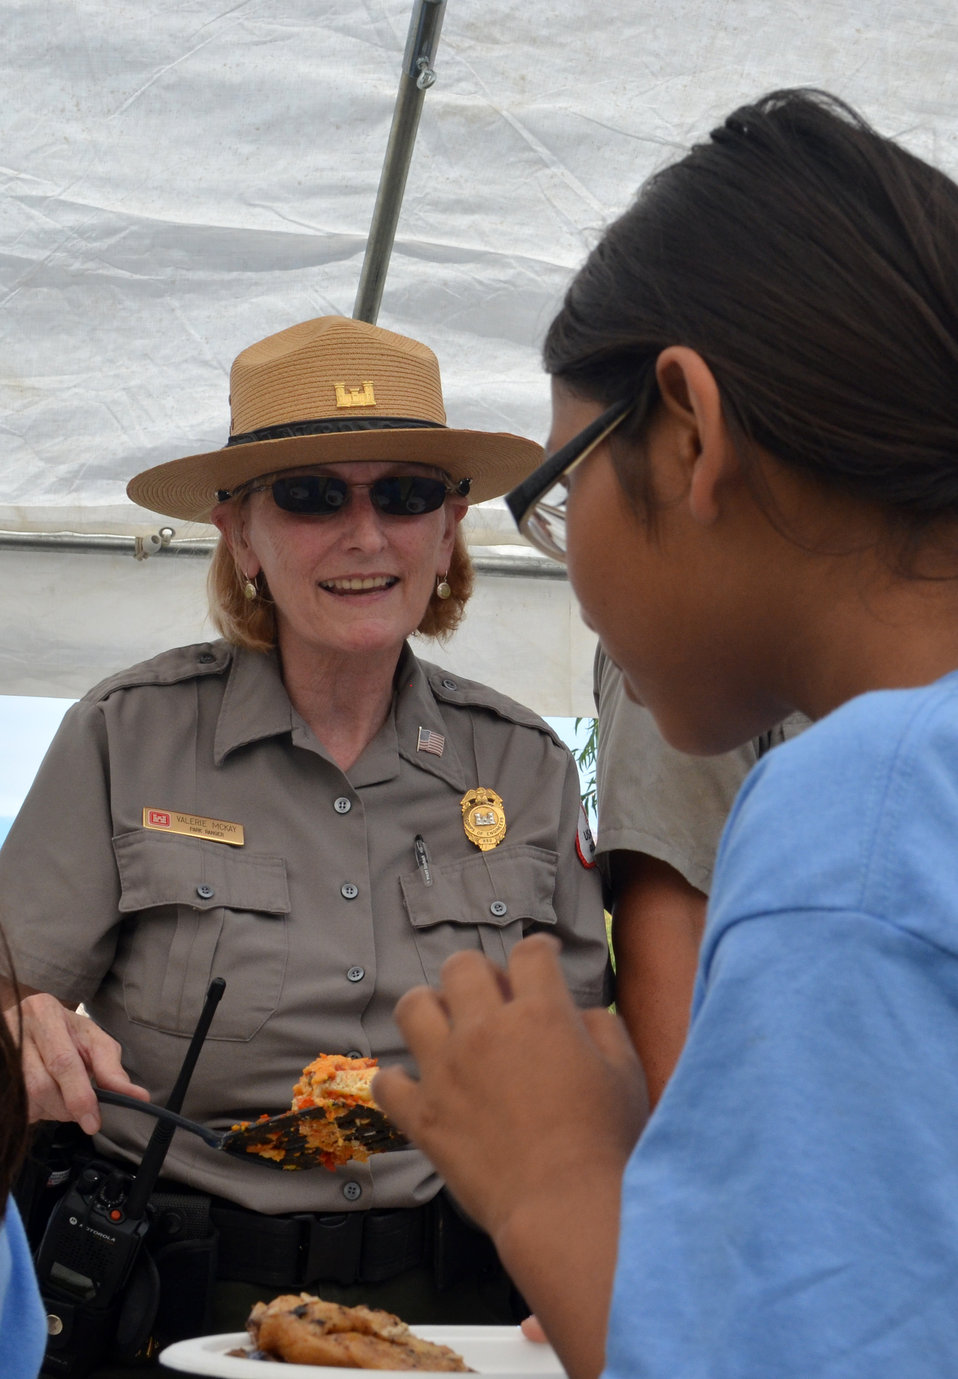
National Public Lands Day at Lake Kaweah

Park Ranger Valerie McKay, with the U.S. Army Corps of Engineers Sacramento District's Lake Kaweah, hands out food to National Public Lands Day volunteers Sept. 24. Around 100 volunteers showed up to participate in the event at the lake, located near Lemon Cove, Calif.